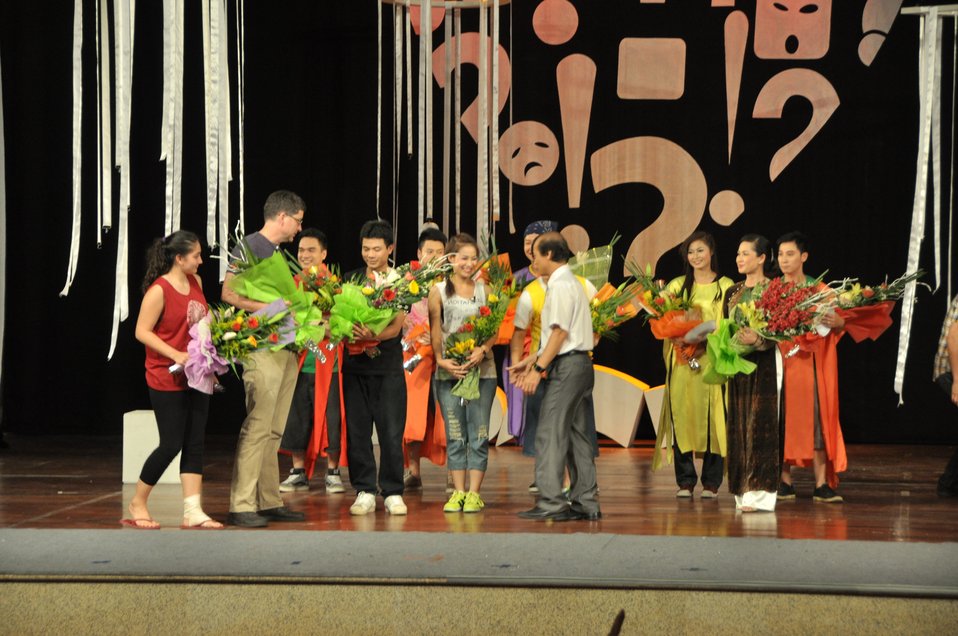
PEPFAR Musical Questions and Exclamations